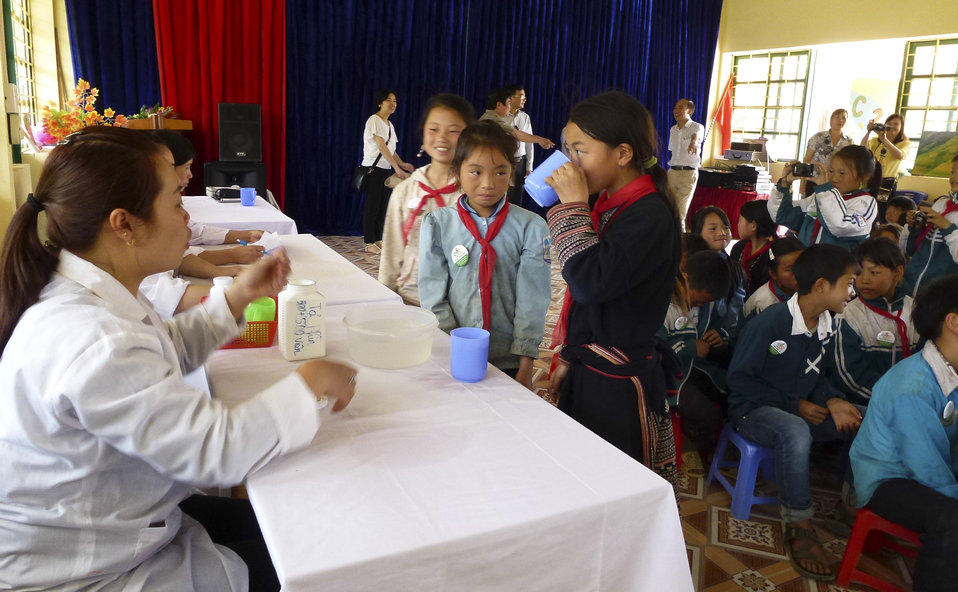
USAID supports deworming medication for school children in Sa Pa district of Lao Cai province

May 13, 2014.